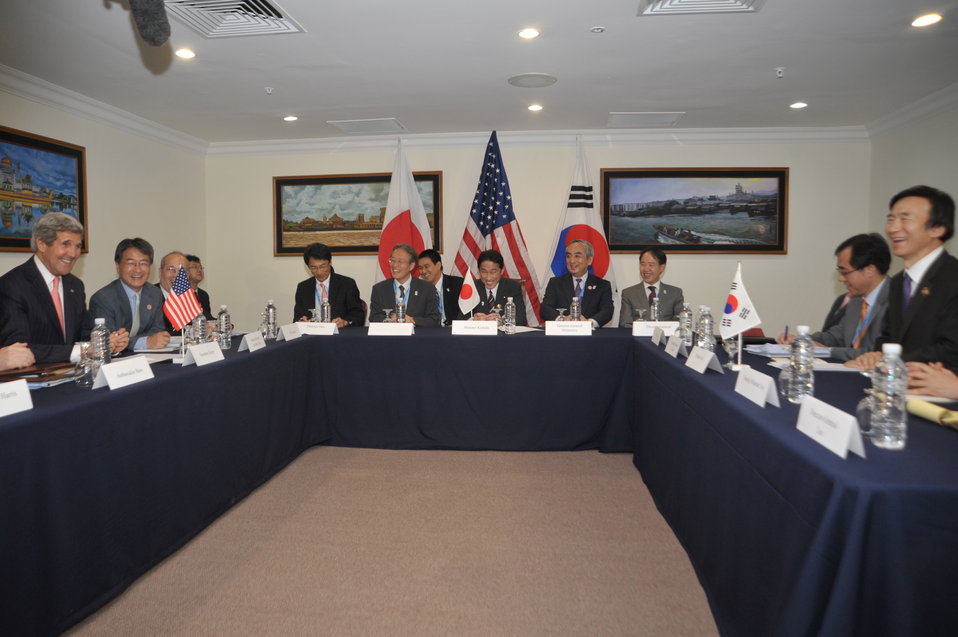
Secretary Kerry attends the trilateral meeting with Japanese Foreign Minister Fumio Kishida and Republic of Korea Foreign Minister Yun Byung-se at the ASEAN ministerial meeting in Brunei on July 1, 2013. the trilateral meeting.